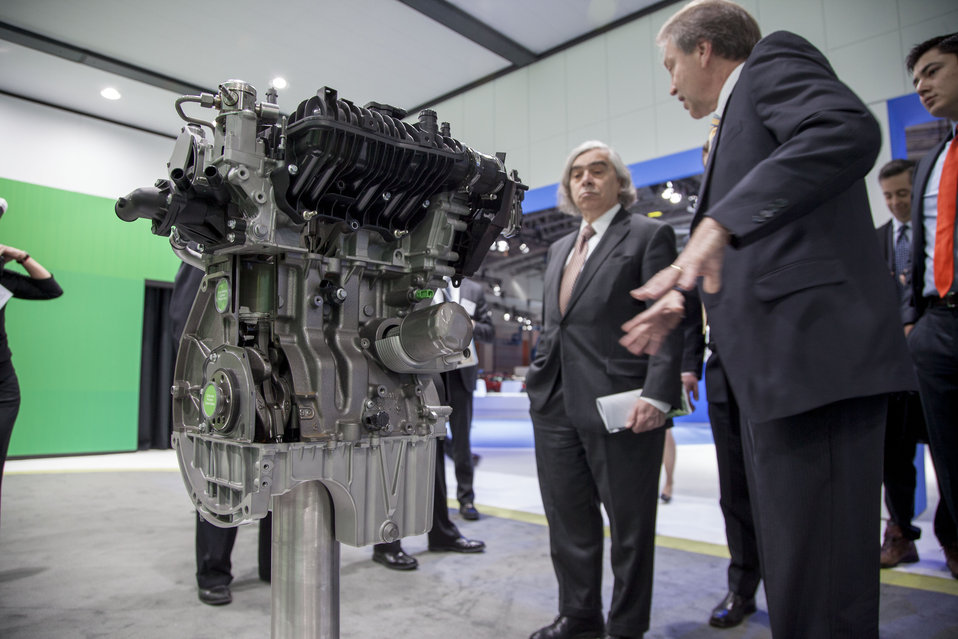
Ford’s Ecoboost Engine technology builds on the Energy Department’s research to improve fuel economy and lower emissions of combustion engines. The Energy Department’s research has helped lead to many technologies used in vehicles to improve efficiency, such as turbocharging and engine downsizing. Based on results from laboratory tests, the Energy Department predicts that the fuel economy for internal combustion engine passenger vehicles can be further improved by more than up to 50 percent.